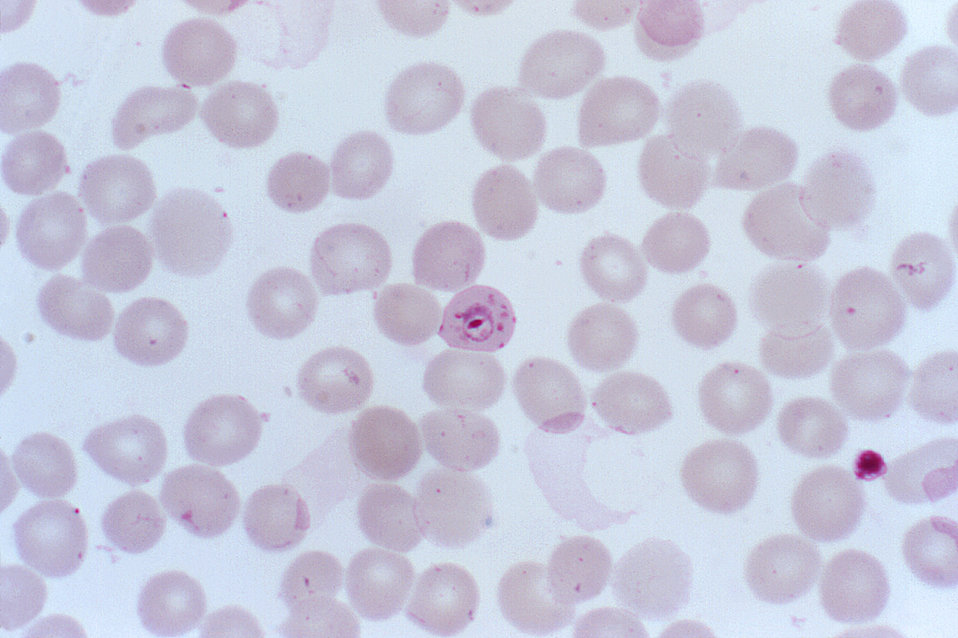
This photomicrograph shows a Plasmodium falciparum parasite in the ring stage, and containing Maurer's dots.